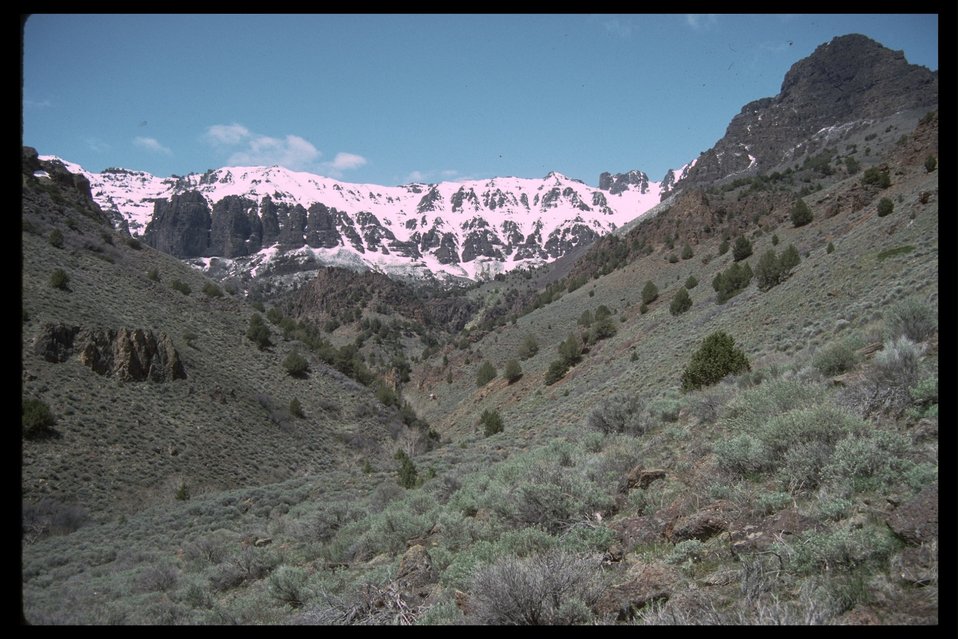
High Steens looking west up Pike Creek at Steens Escarpment. (2-85F)